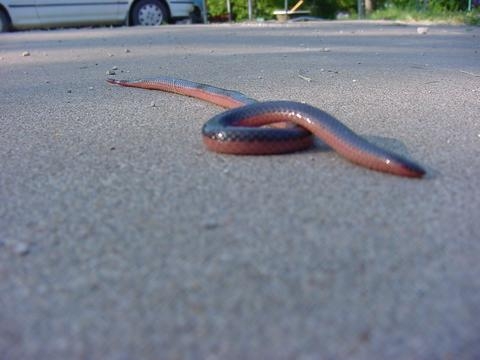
Wormsnake